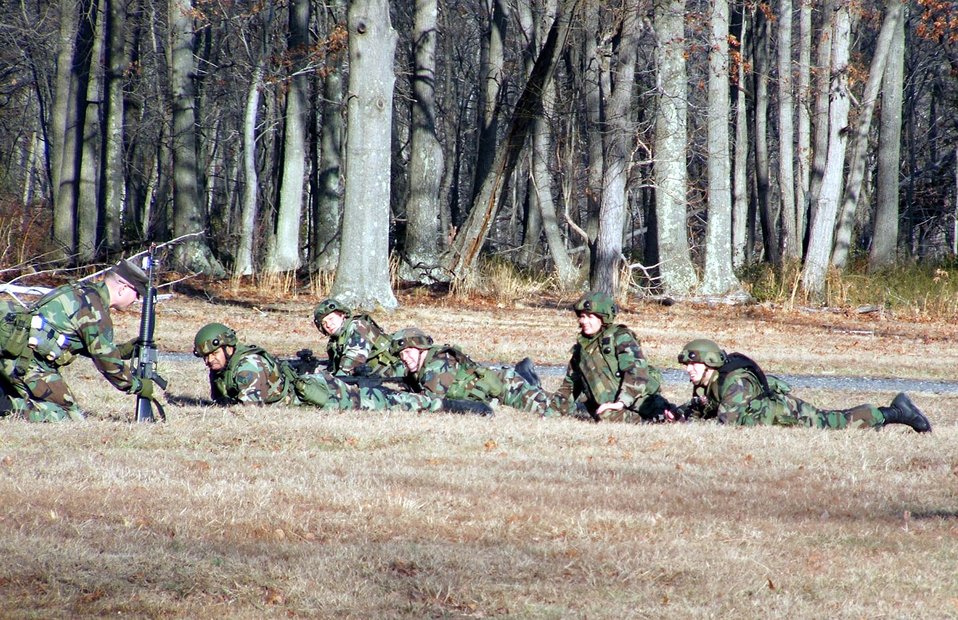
AIR FORCE INTEGRATED CONTINGENCY SKILLS TRAINING COURSE 06-1

FORT DIX, N.J. (AFPN) -- Instructors teach Airmen combat field tactics during a training session Jan. 12. More than 100 students from multiple career fields participate in the Air Force Integrated Contingency Skills Training Course. The course is directed and taught by the Air Mobility Warfare Center's 421st Combat Training Squadron.